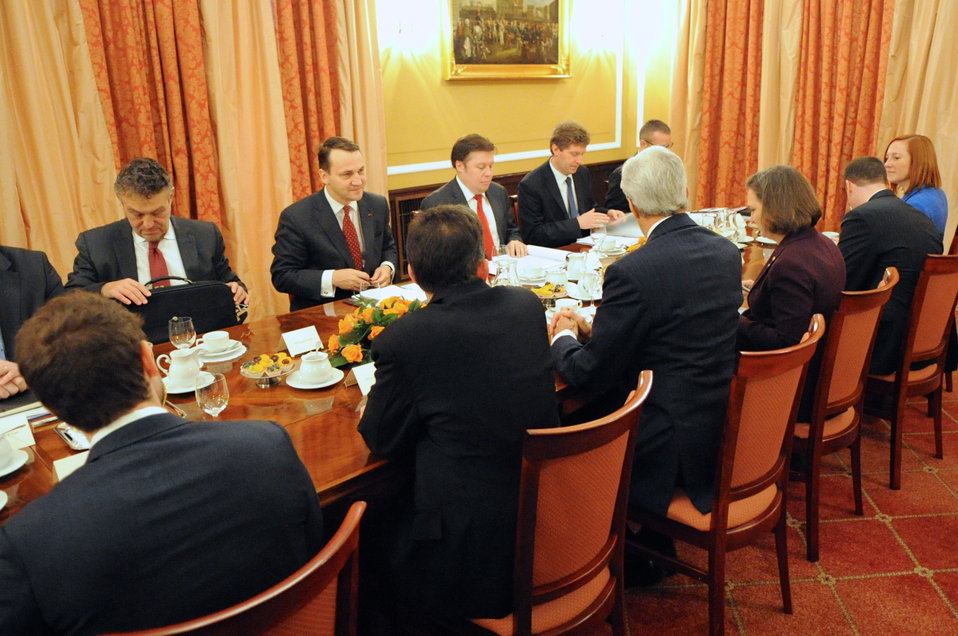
Secretary Kerry and Staff Meet With Polish Foreign Minister Sikorski and Counterparts

U.S. Secretary of State John Kerry and his team settle in for a meeting with Polish Foreign Minister Radoslaw Sikorski and their counterparts at the Foksal Palace in Warsaw, Poland, on November 5, 2013.